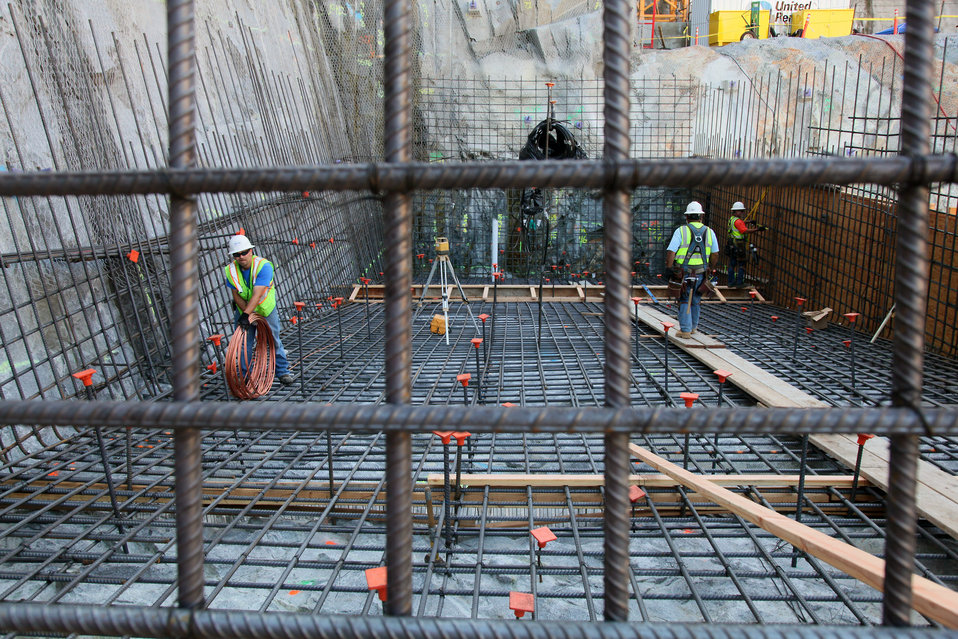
Preparations for concrete placement at the Folsom auxiliary spillway

Contractors for the U.S. Army Corps of Engineers Sacramento District work in a web of rebar in preparation for concrete placement for the auxiliary spillway control structure at the Folsom Dam in Folsom, Calif., May 30, 2012. The spillway project is part of the Folsom Dam Joint Federal Project, a joint effort of the Corps, U. S. Bureau of Reclamation, the Central Valley Flood Protection Board and the Sacramento Area Flood Control Agency to improve the safety of the current dam and reduce flood risk for the greater Sacramento area.